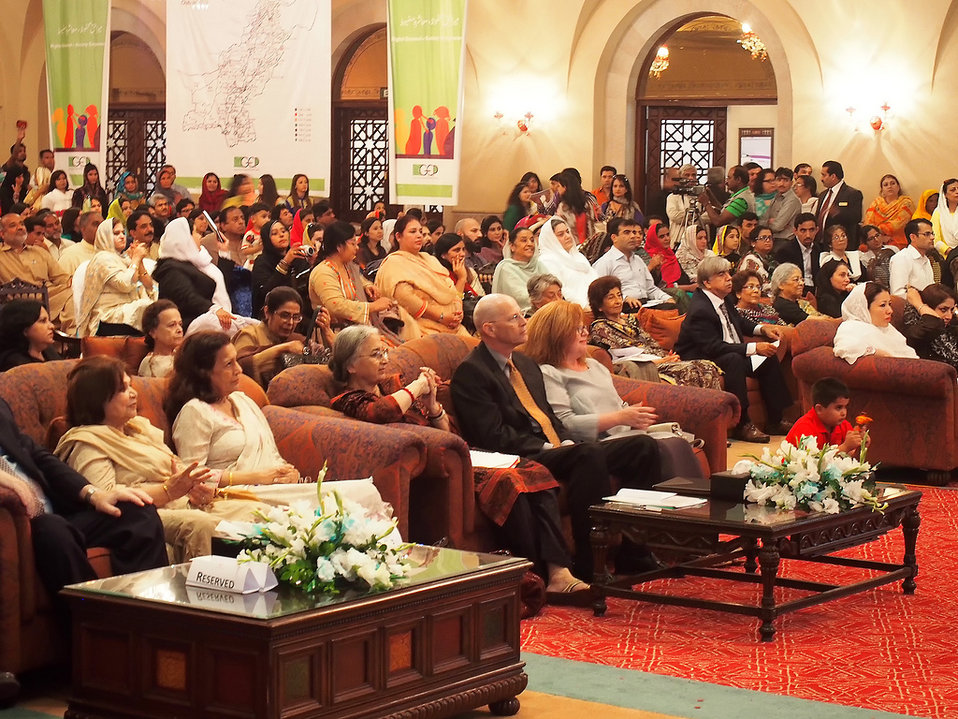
Gender Equity Program, Pakistan

USAID and Aurat Foundation annual event in Islamabad, Sept. 20, 2013